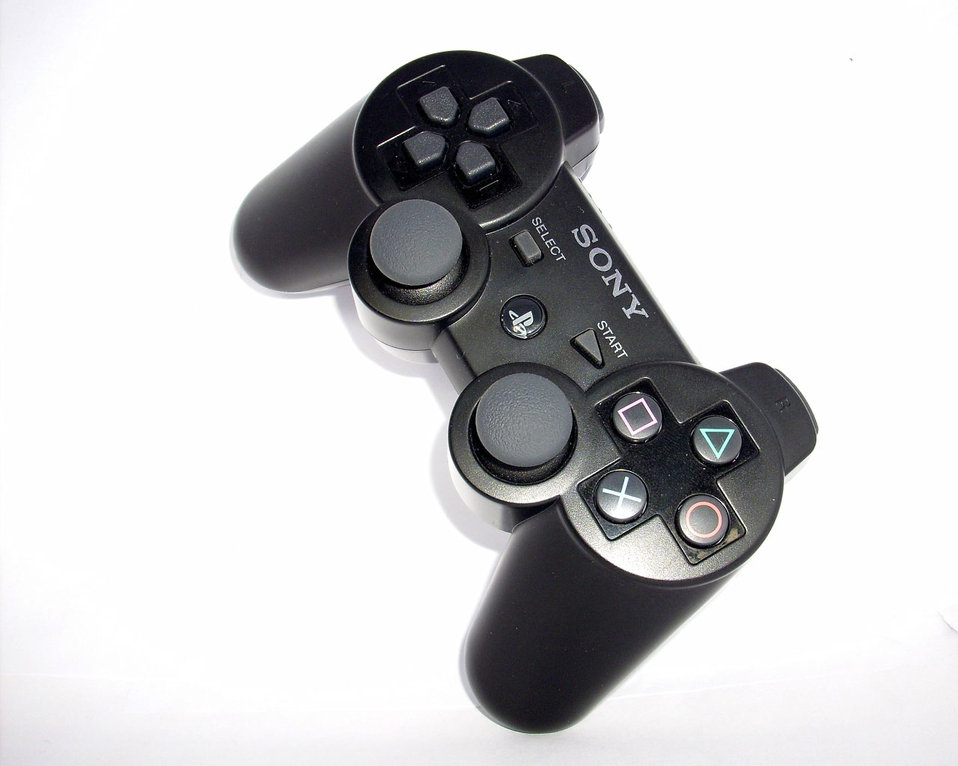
Ps3 controller

Sony playstation 3 sixaxis wireless controller.